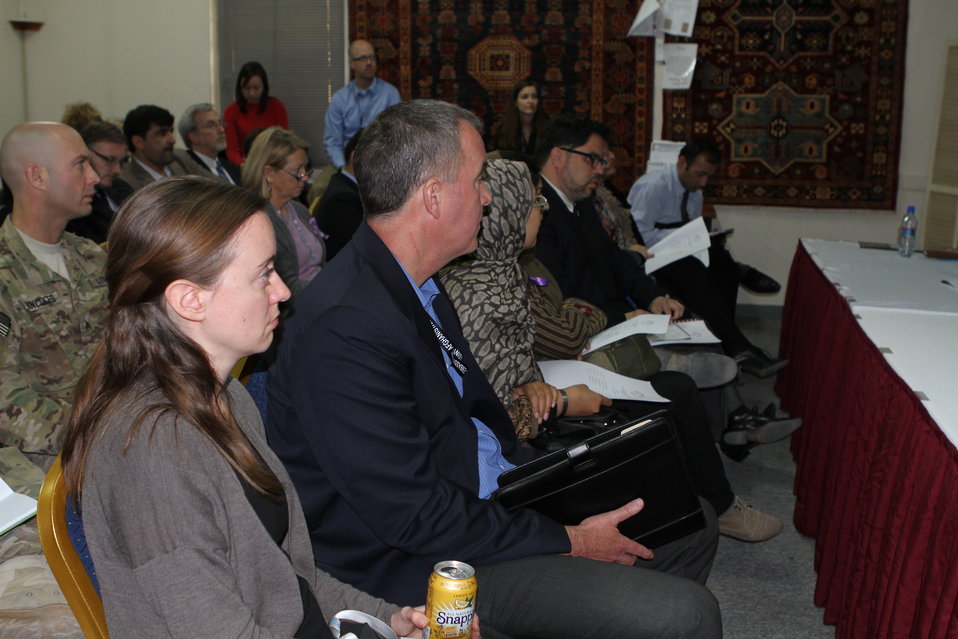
Presentation of the ACTA Civil Society analysis of the FY 1392 Afghan national budget